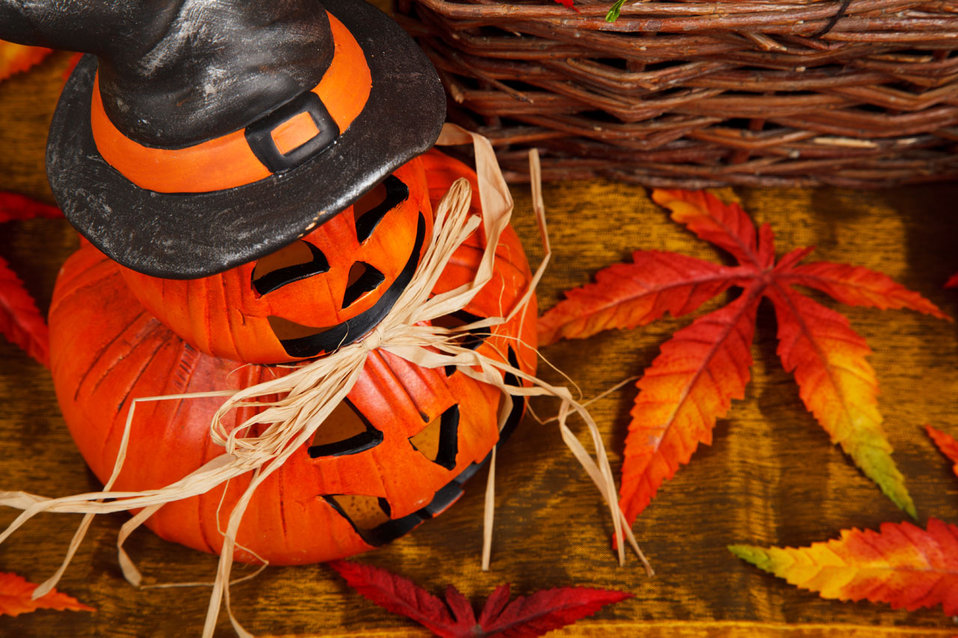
Halloween pumpkin

Halloween theme photo with pumpkin candle holder and autumn leaves.